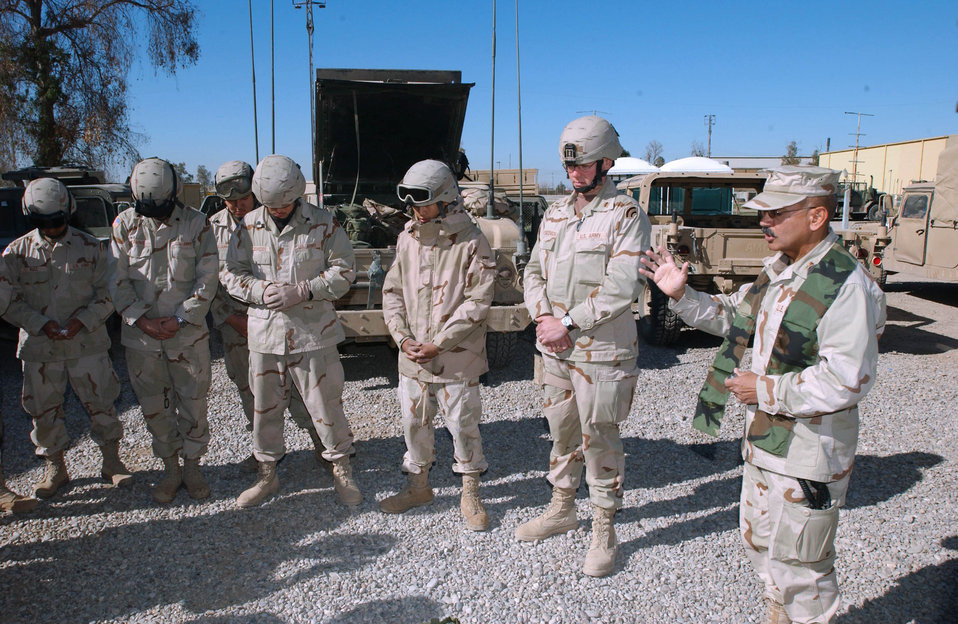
Bless this route

KIRKUK, Iraq -- Air Force Chaplain (Capt.) Hector Colon gives a blessing to Soldiers before they depart on a convoy to Tikrit. Chaplain Colon is deployed to the 506th Air Expeditionary Group here, from the 325th Fighter Wing at Tyndall Air Force Base, Fla.